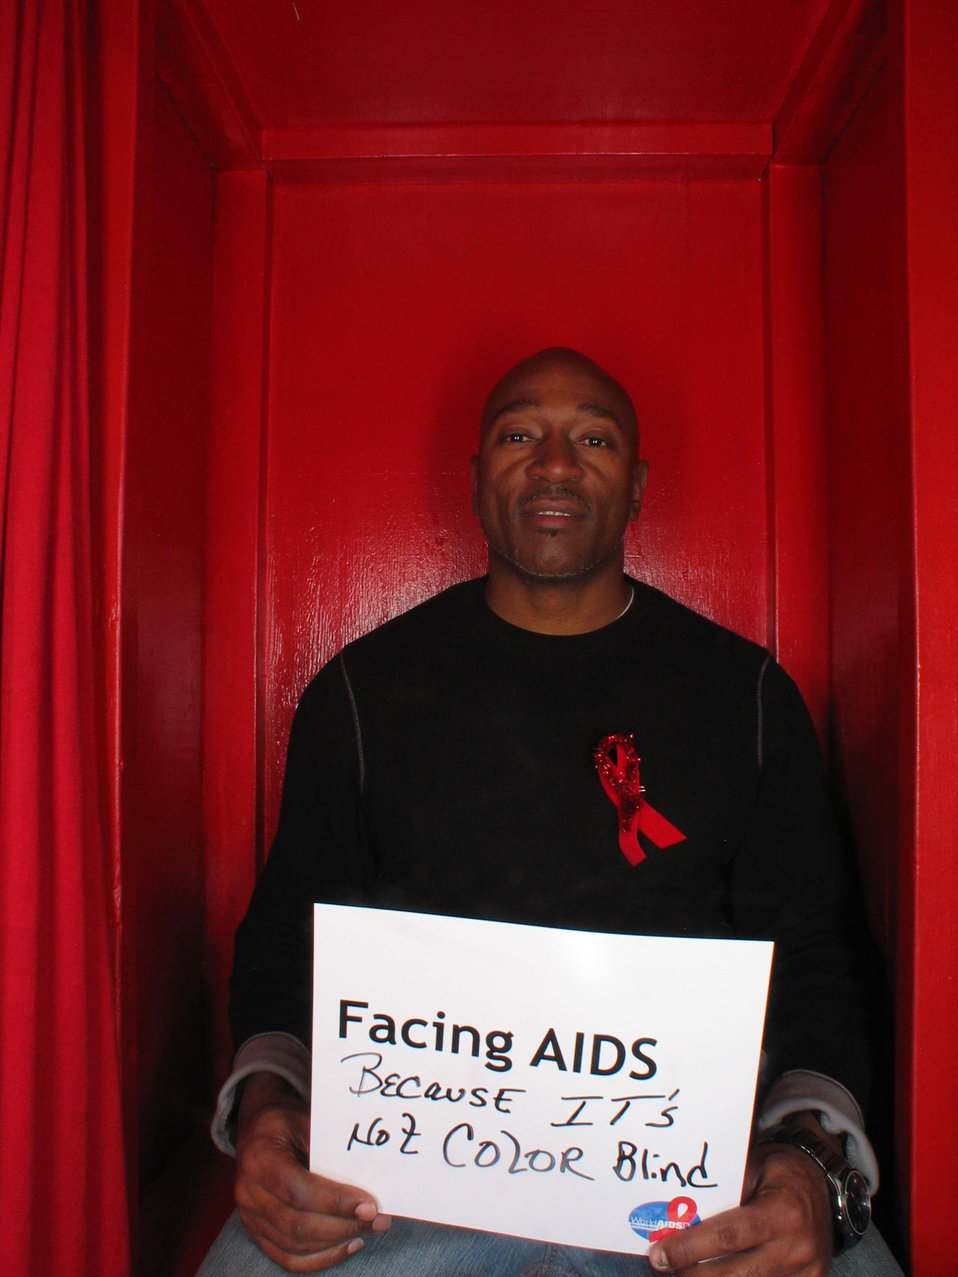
Facing AIDS because it's not color blind.